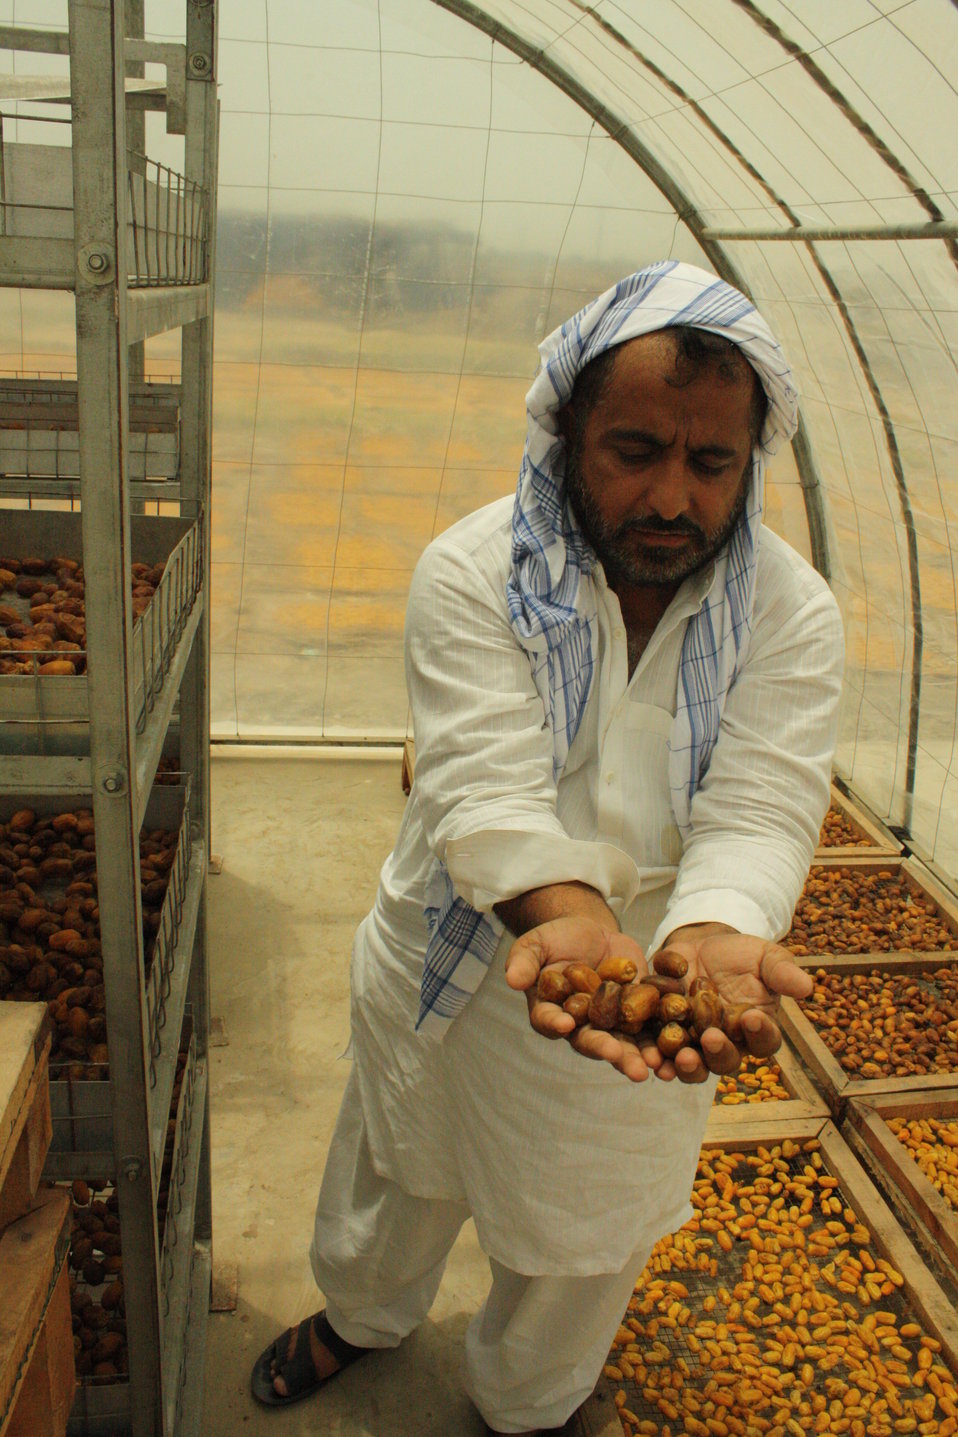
Solar dryers being installed at date farms are cost-effective since they do not no need any electricity.